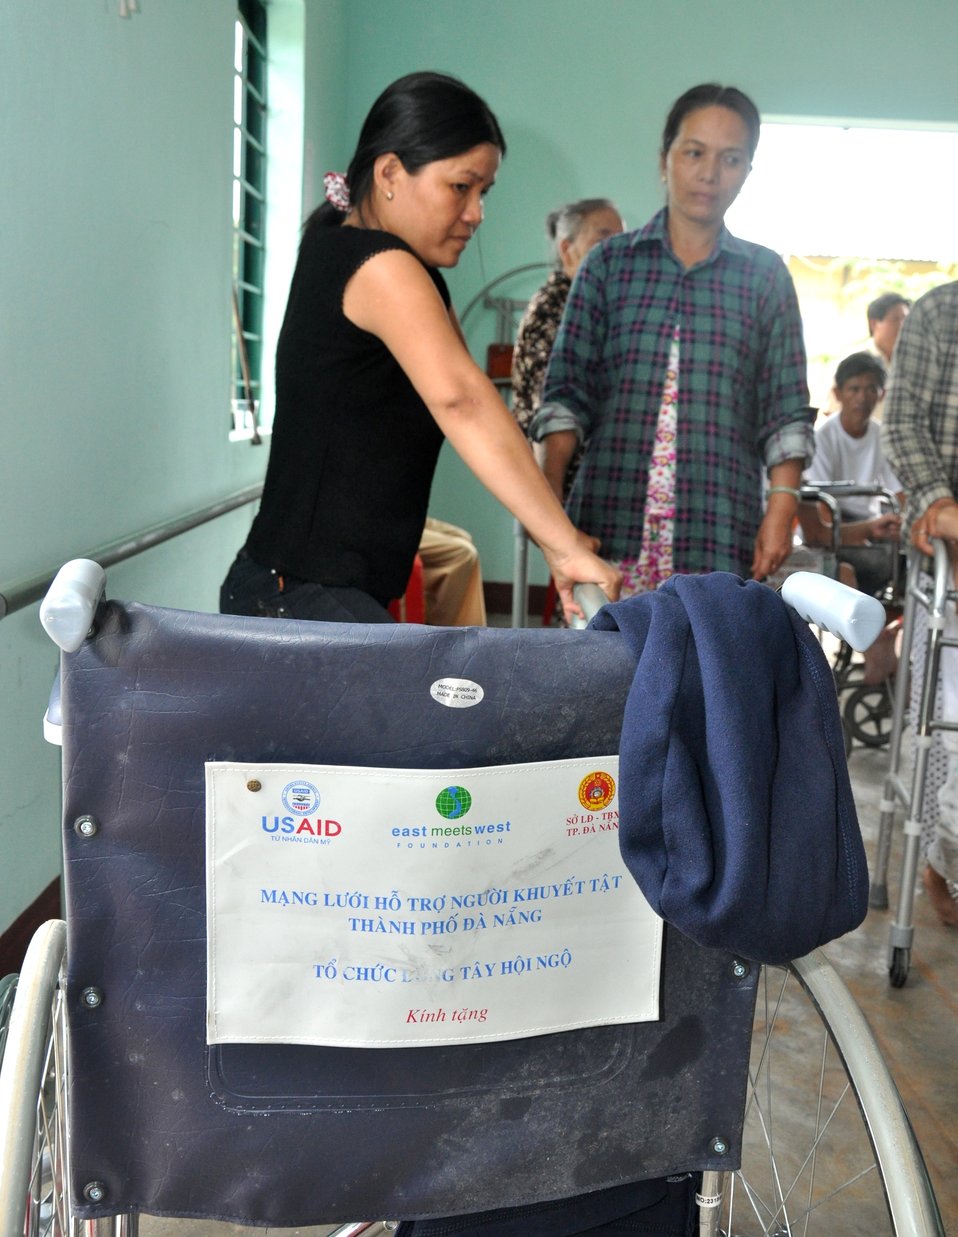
USAID supports a community rehabilitation unit in Danang.

Danang, June 10, 2013.